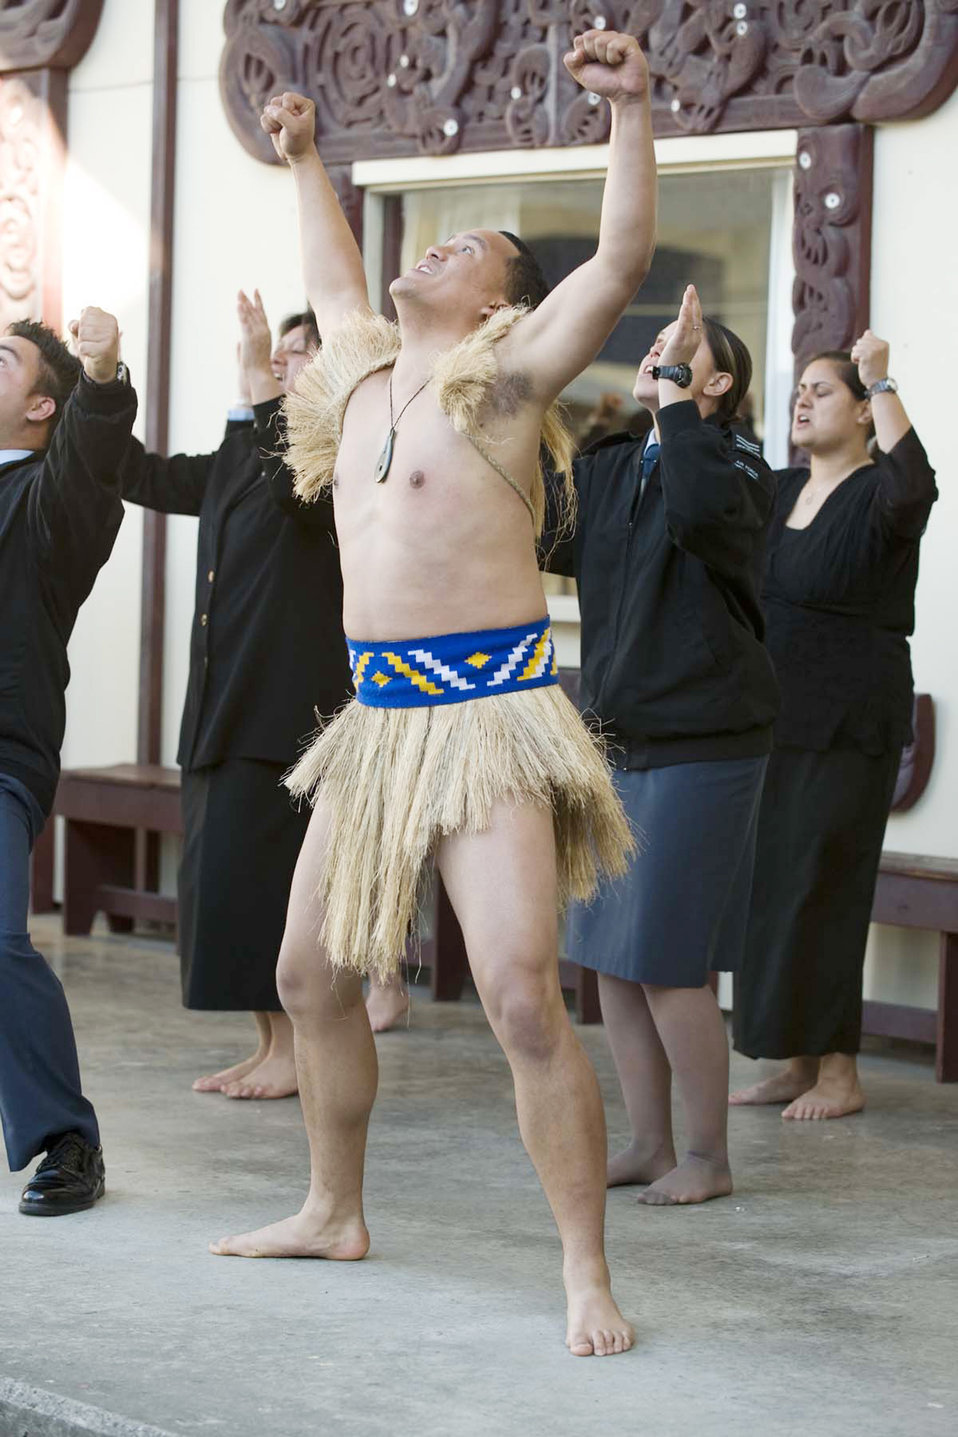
New Zealand hosts multilateral talks

Royal New Zealand air force members welcome delegates of the Pacific Rim Airpower Symposium and Senior Enlisted Leadership Conference June 23 in Wellington, New Zealand. Representatives from 19 Asia-Pacific nations took part in the events June 23 through 27 aimed at improving cooperation and interoperability between regional air forces.